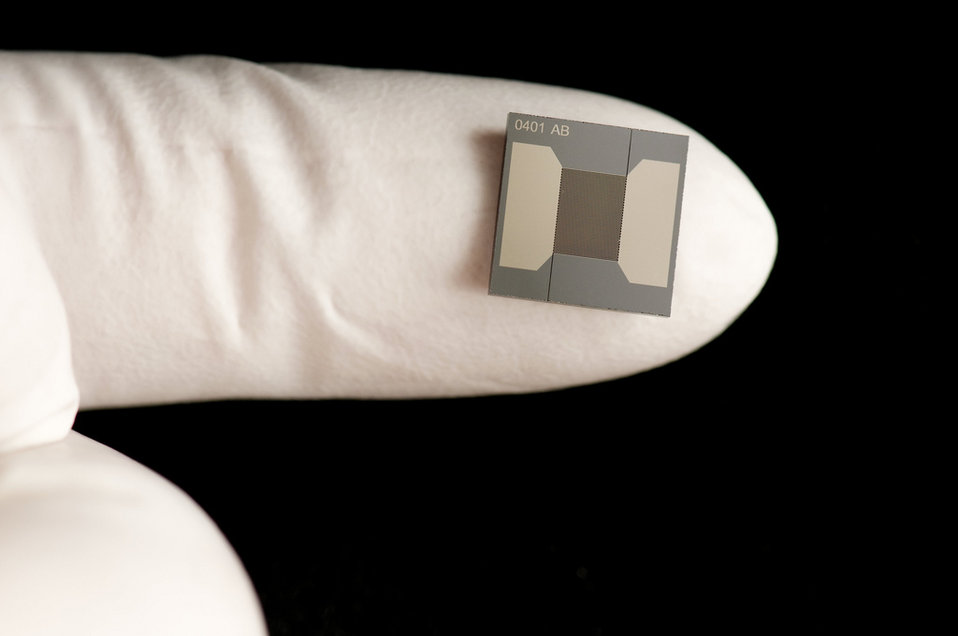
At PNNL, IMS on a chip: this dime-sized chip provides dozens of channels through which ions travel (perpendicular to plane of view) to be separated and identified.